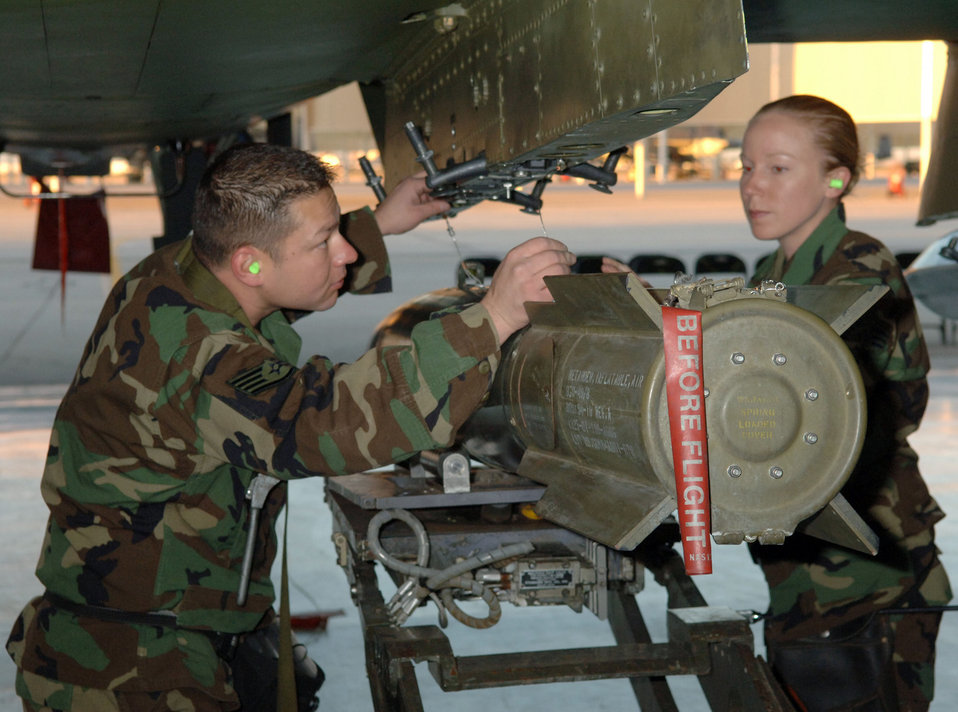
Load Crew

DAVIS-MONTHAN AIR FORCE BASE, Ariz. (AFPN) -- Staff Sgt. Luis Heredia and Senior Airman Jessica Steele line up the suspension lugs of the 500-pound bomb to ensure it will lock into place properly for transportation and than release at its target site. The two Airmen are assigned to the 355th Aircraft Maintenance Squadron. The 355th AMXS is comprised of the 354th, 357th and 358th Aircraft Maintenance Units. The 357th AMU placed first and completed the load in 38 minutes and 44 seconds.